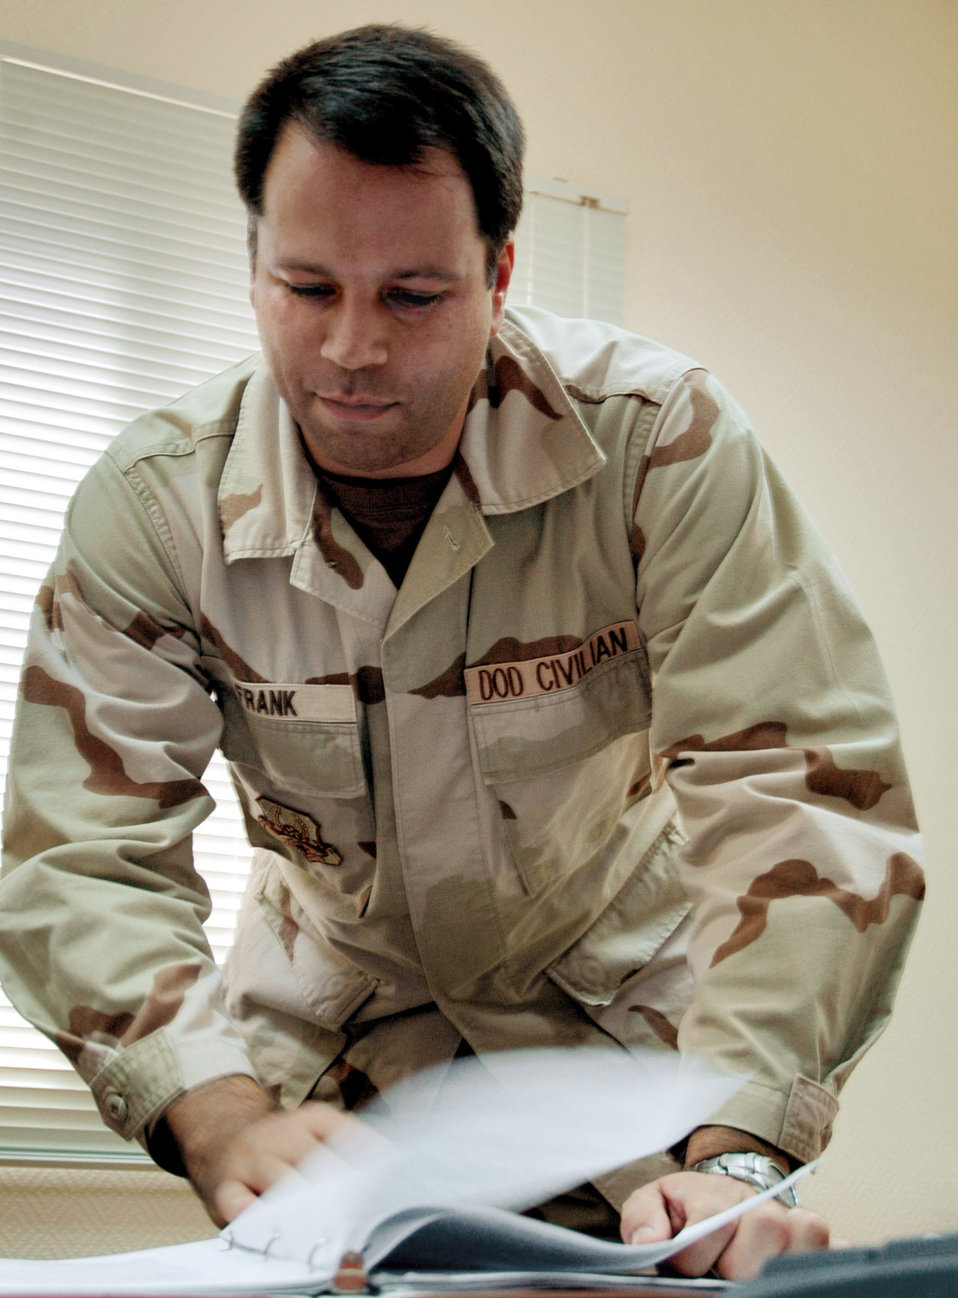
Historical first

SOUTHWEST ASIA -- James Frank is the first Department of Defense civilian historian to deploy on an Air Expeditionary Force cycle. He will collect, organize, safeguard and preserve historically significant data pertaining to the mission at this base. Mr. Frank is on a 120-day rotation.